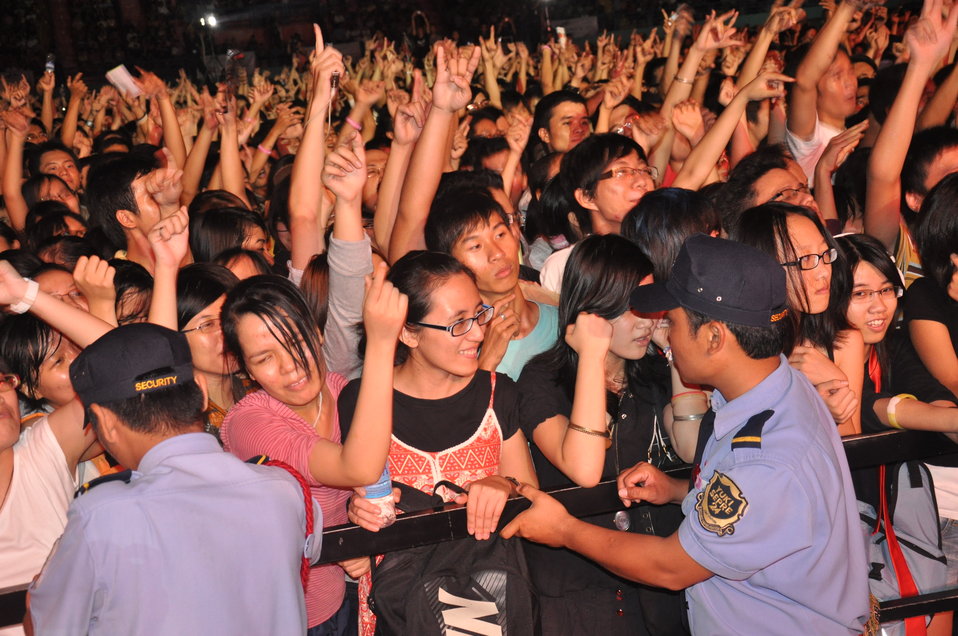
USAID MTV EXIT HCMC Concert

Concert in Ho Chi Minh City against human trafficking, April 17, 2010